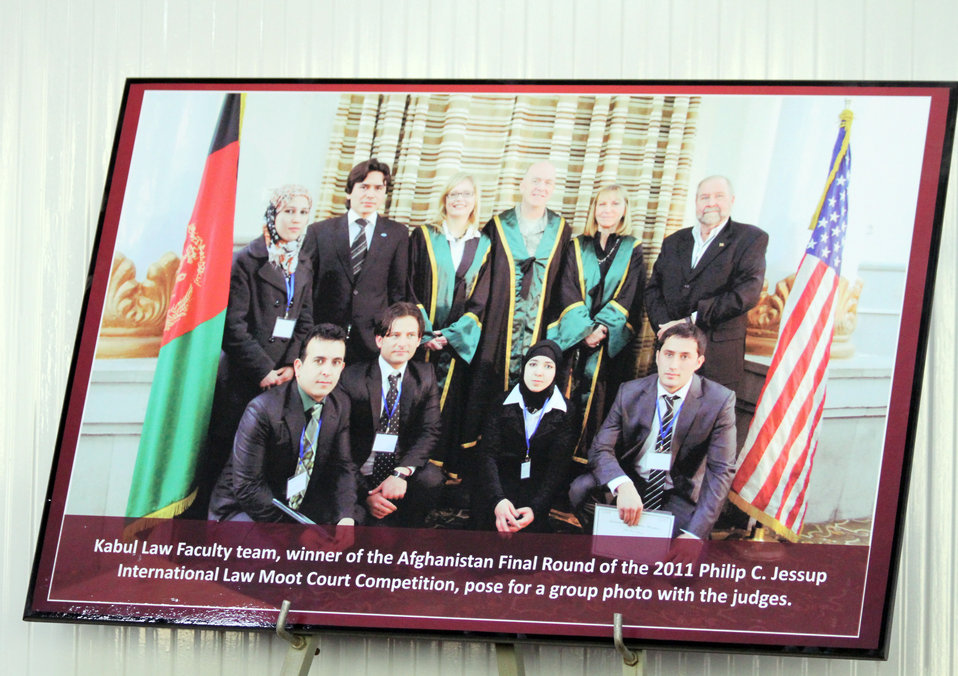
Afghanistan Final National Round of the 2013 Philip C.Jessup International Law Moot Court Competition